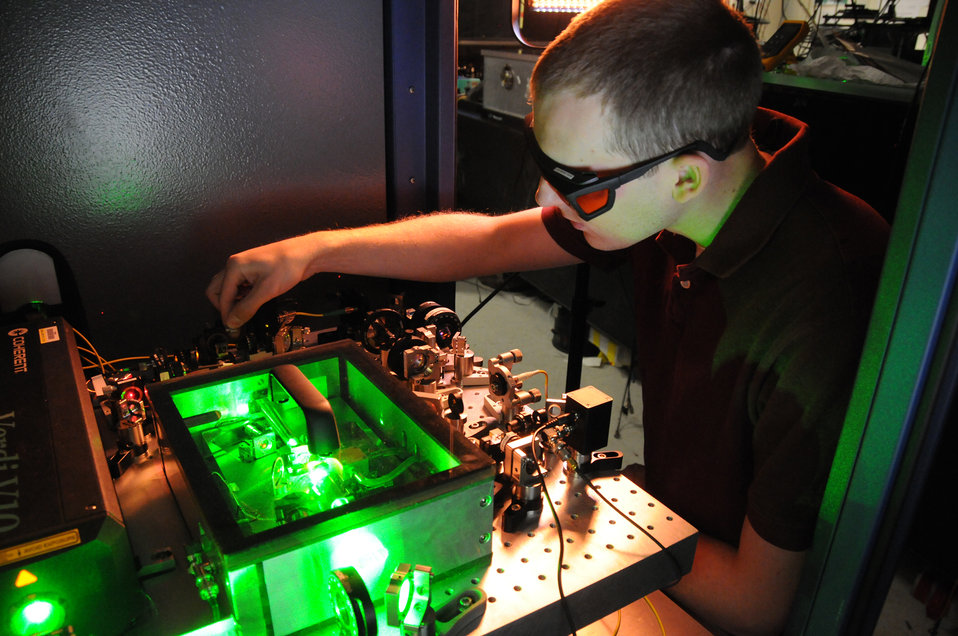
Microwave Generator

Matt Kirchner, a University of Colorado graduate student, fine-tunes an ultra-stable microwave generator that he helps operate at NIST.